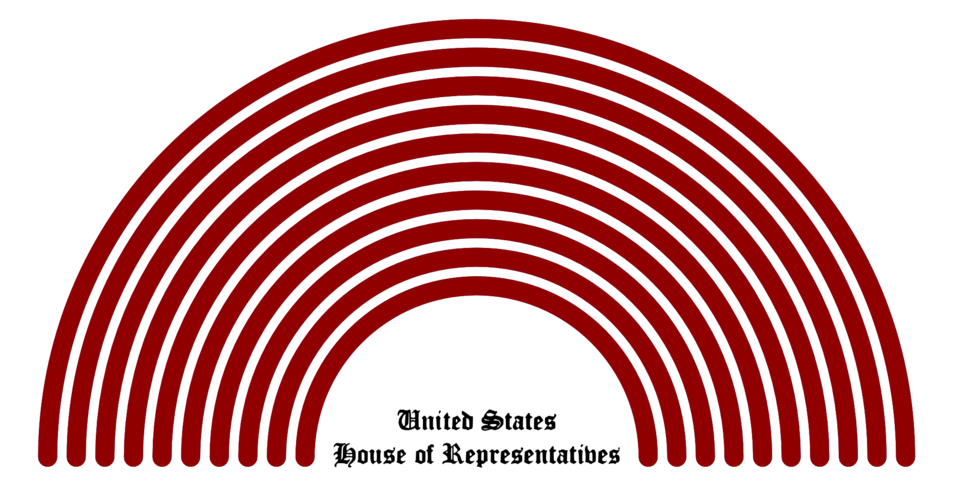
Breakdown of political party representation in the United States House of Representatives during the 112th Congress.
Blue: Democrat
Red: Republican
This SVG file was originally hand-written. It contains comments suggesting how to amend it to reflect future changes in Congress. Inkscape reads this file as corrupted, thus changes must be made with a text editor or other program and checked with a browser.